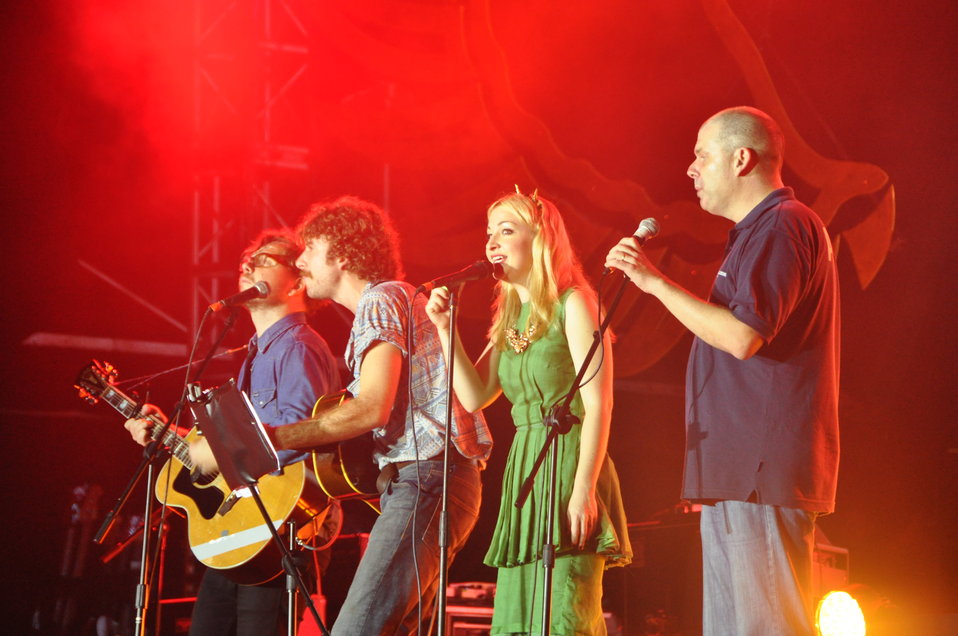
Kate Miller-Heidke and AusAID's Michael Wilson perform at the MTVEXIT concert in Hanoi